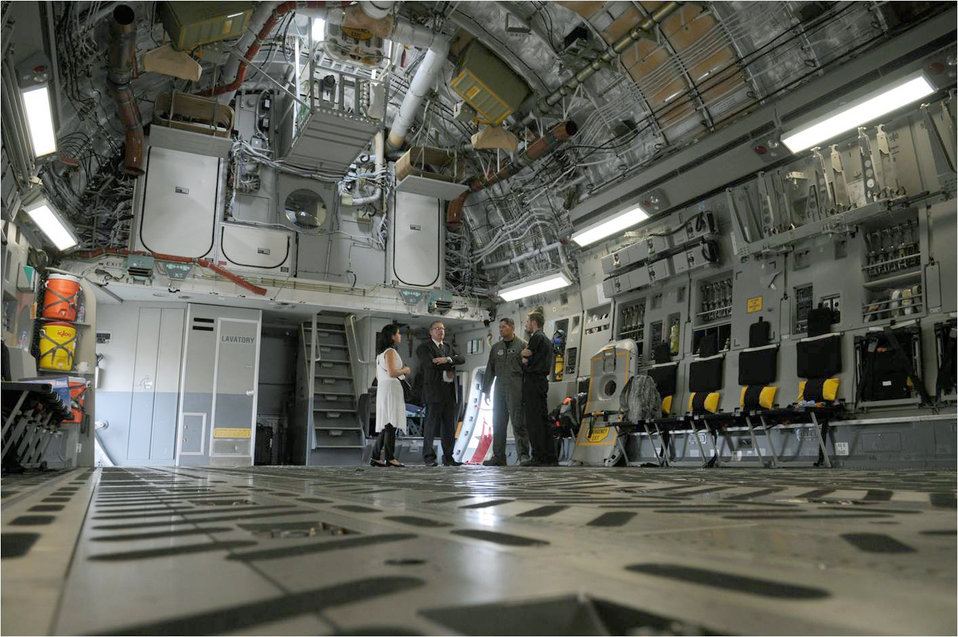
Farnborough 2010

Spectators tour the cargo bay of a C-17 Globemaster III from Travis Air Force Base, Calif., July 20, 2010, in Farnborough, England. Eleven U.S. military aircraft and approximately 70 personnel representing all branches of service participate in the 2010 Farnborough International Air Show.